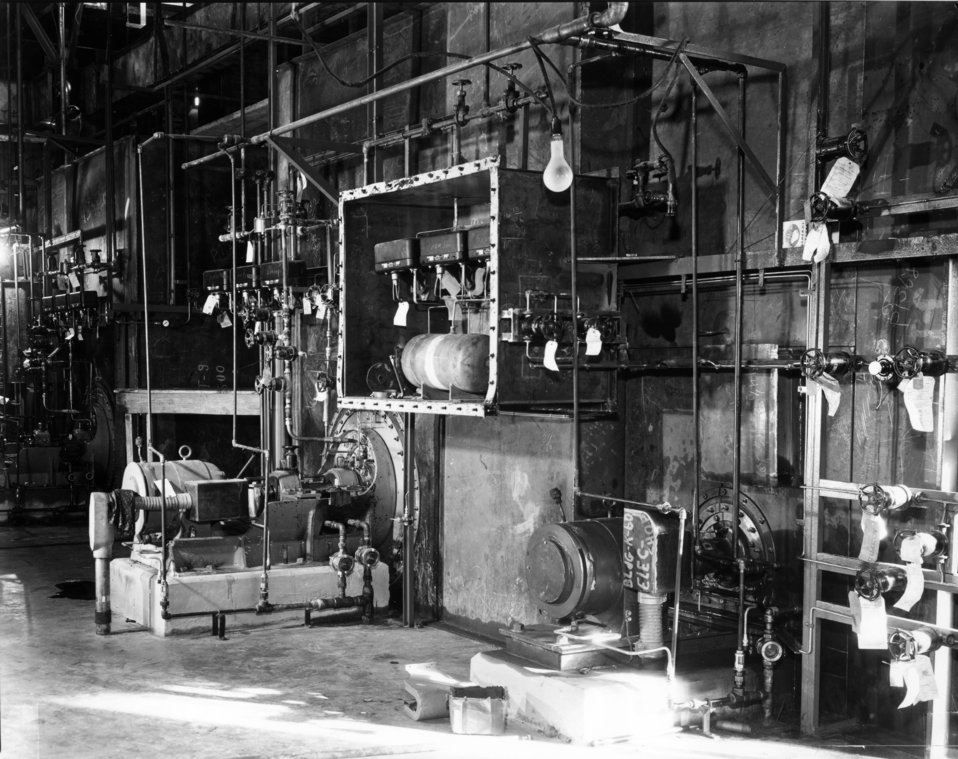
K-25 at Oak Ridge